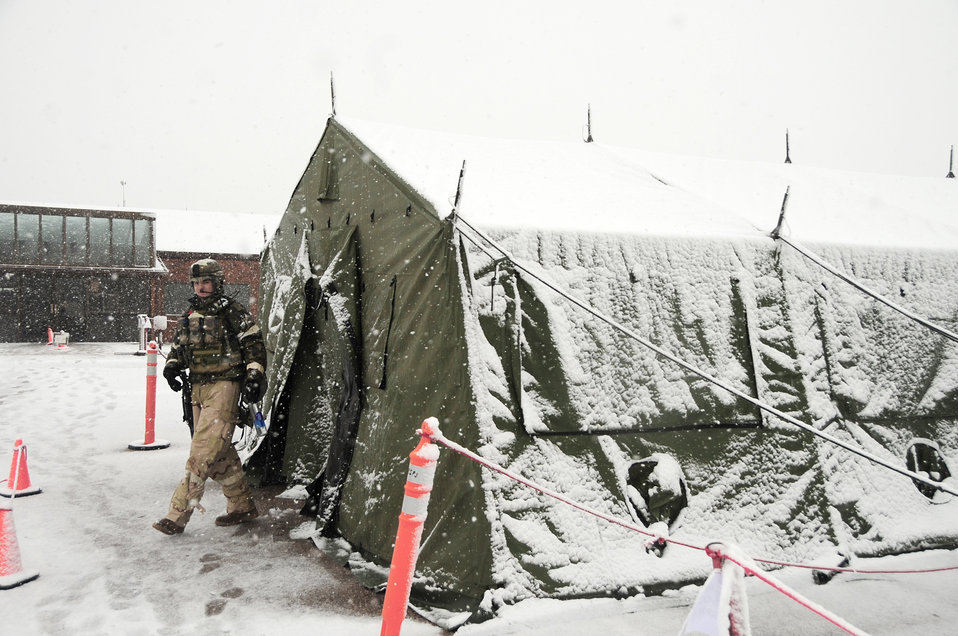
Ellsworth operational readiness exercise

Senior Airman Jeremy Ross leaves a covered tent to patrol the area during an operational readiness exercise May 12, 2010, at Ellsworth Air Force Base, S.D. Airman Ross is a patrolman with 28th Security Forces Squadron.